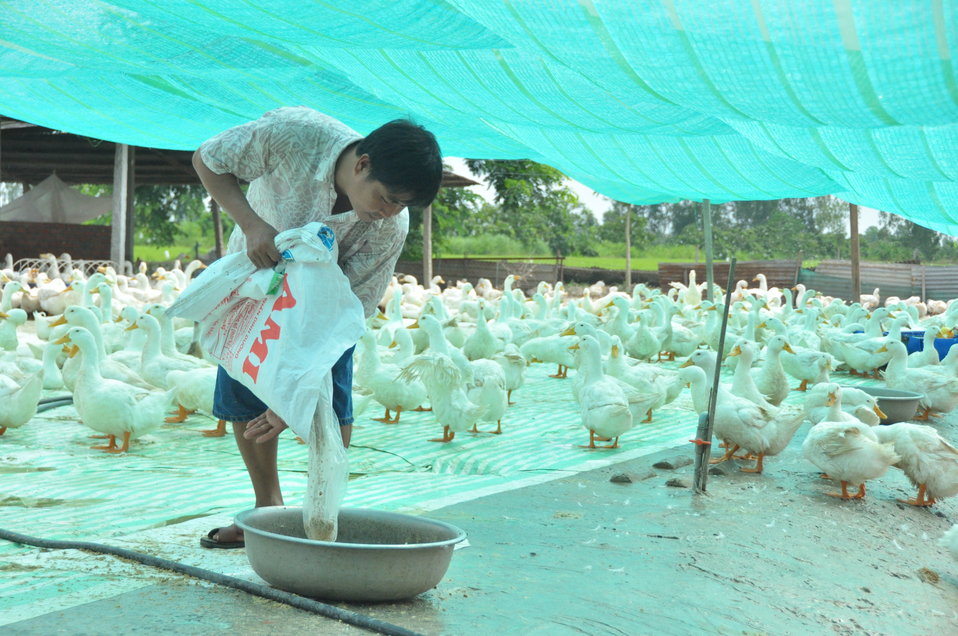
Mr. Thuong prepares feed at his model duck farm in Can Tho

USAID Vietnam